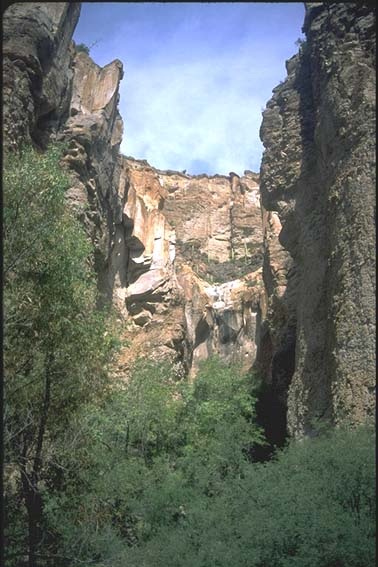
Aravaipa Canyon Wilderness